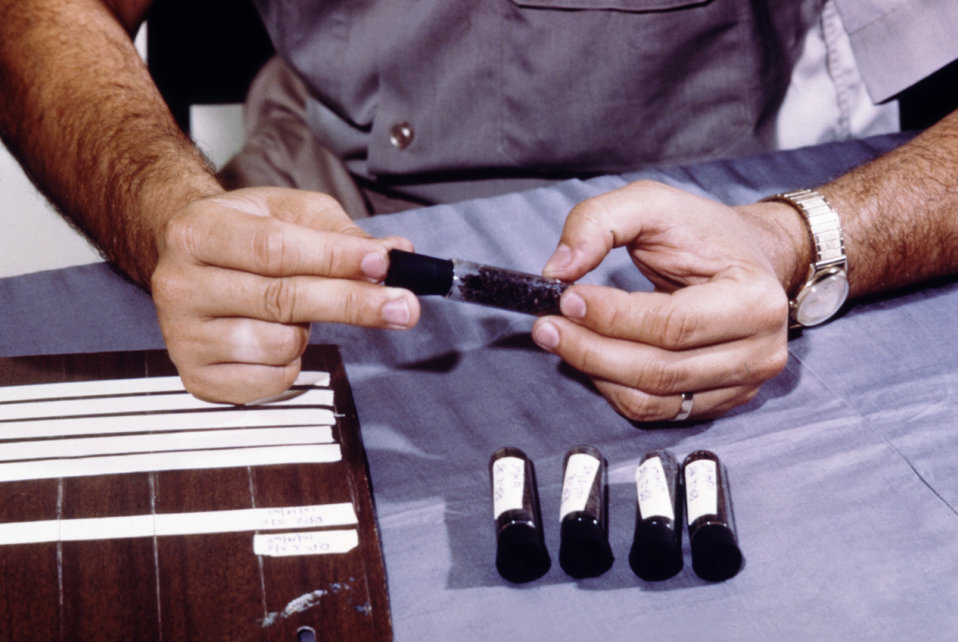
A CDC field researcher is shown here placing stoppers in tubes filled with mosquitoes that will be used for arbovirus studies.